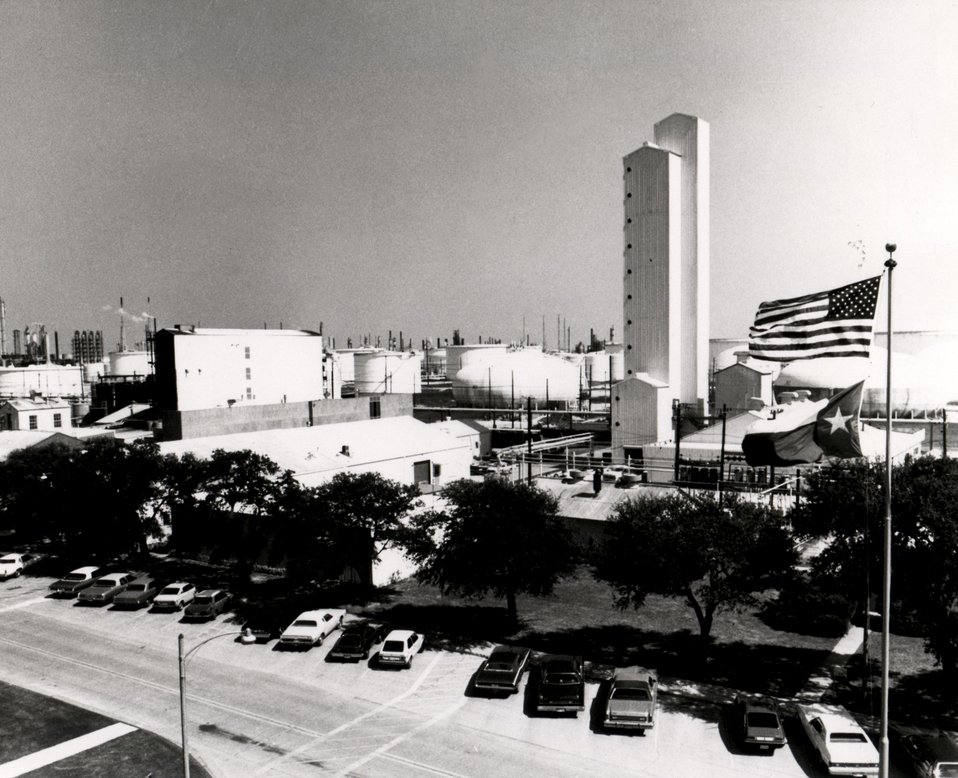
Overall view of the Donor Solvent Coal Liquefaction one ton per day Pilot Plant (left center) and the Catalytis Coal Gasification Unit (tall building right center) at Exxon's Baytown Refinery. Circa 1979.